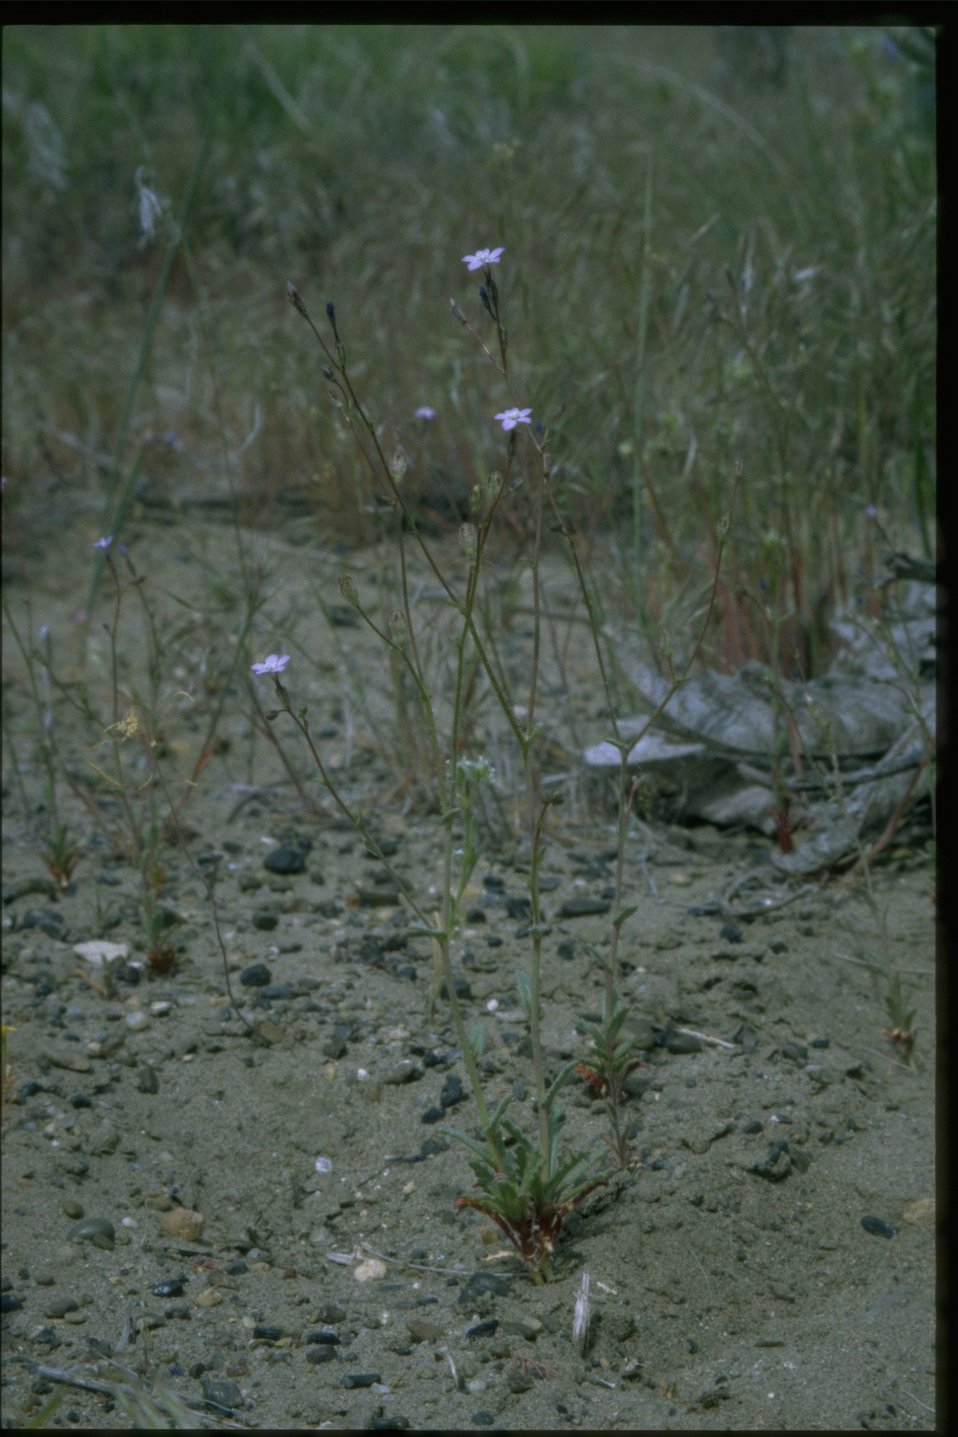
Farshot of Phacelia habitat.